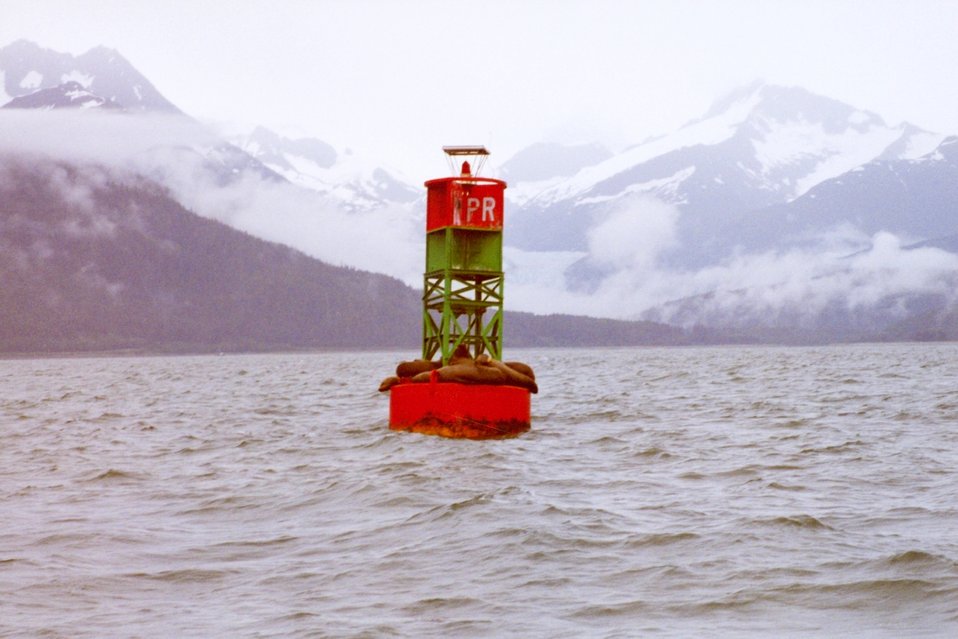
Sea lions find a resting place on a buoy in the labyrinth of Southeast Alaska waterways.